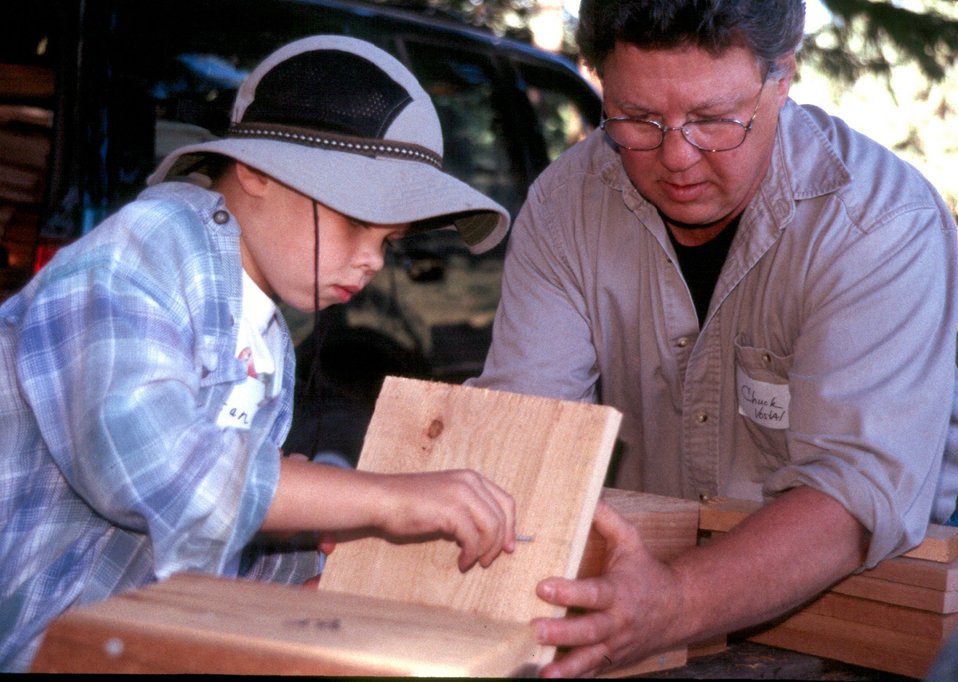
Volunteer Triston Center and BLM employee Chuck Vostal put together a bird box